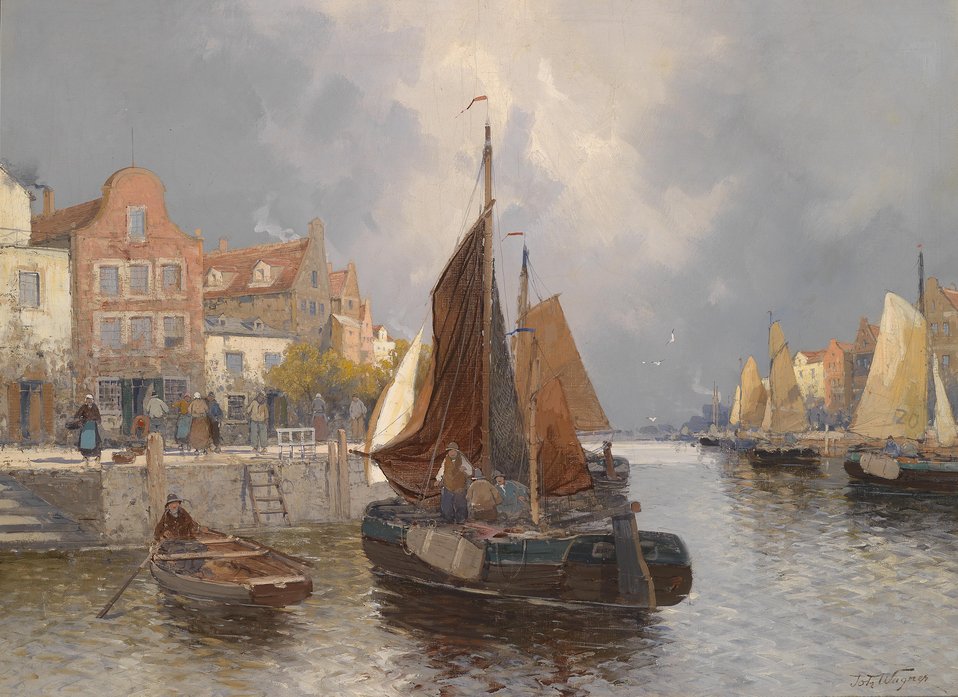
Deutsch: Holländische Hafenansicht, signiert mit dem Pseudonym Th. Wagner, Öl auf Leinwand, 74,5 x 100 cm